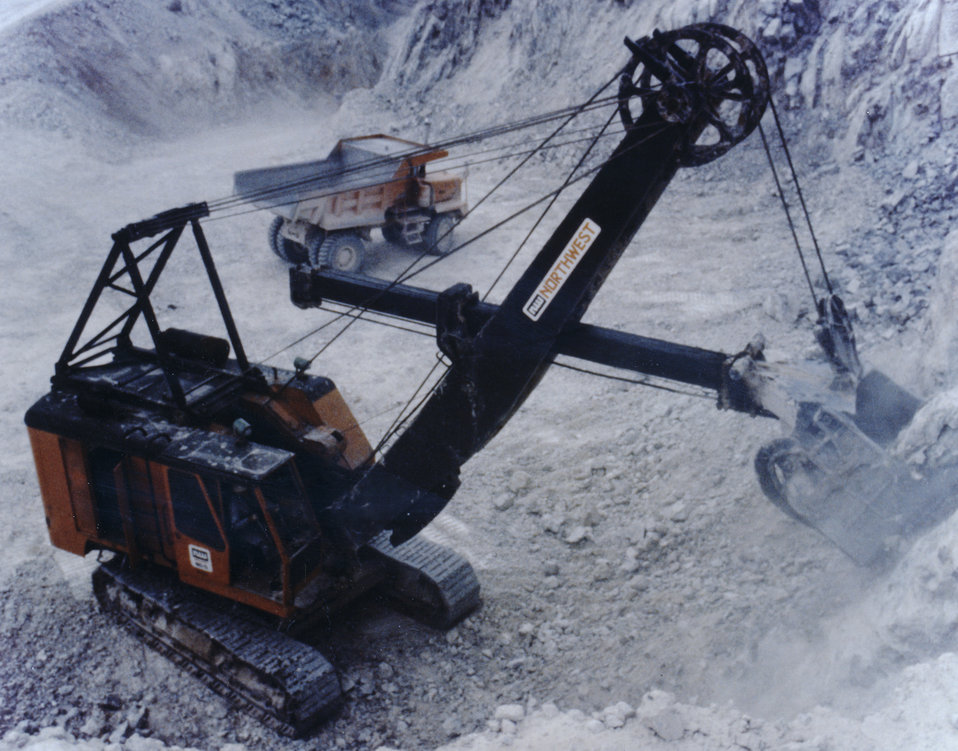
This 1970s photograph shows the loading of trucks to transport products for examination during a NIOSH study at a stone quarry.